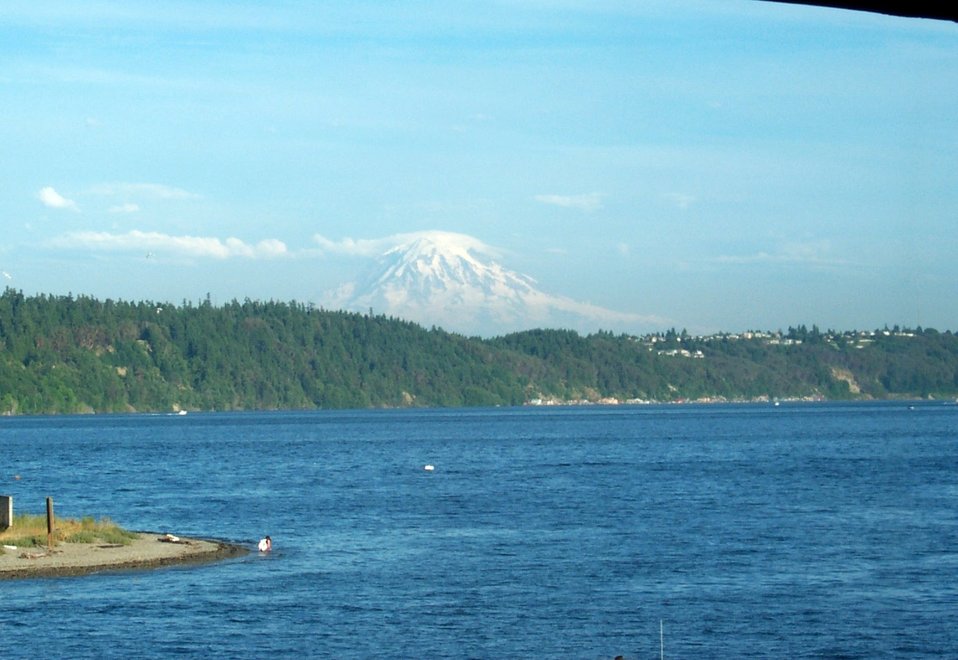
View of Mount Rainier from Gig Harbor.